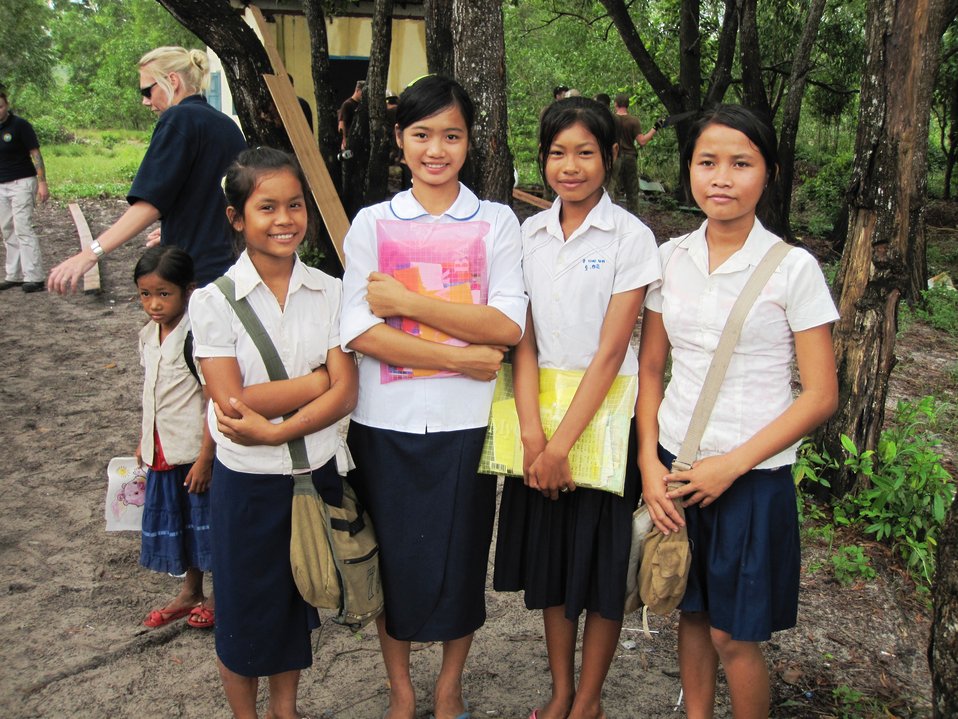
Cambodian students smile for a photo at Otres Primary School, a Pacific Partnership 2010 community service project, outside of Sihanoukville, Cambodia, on June 22, 2010.